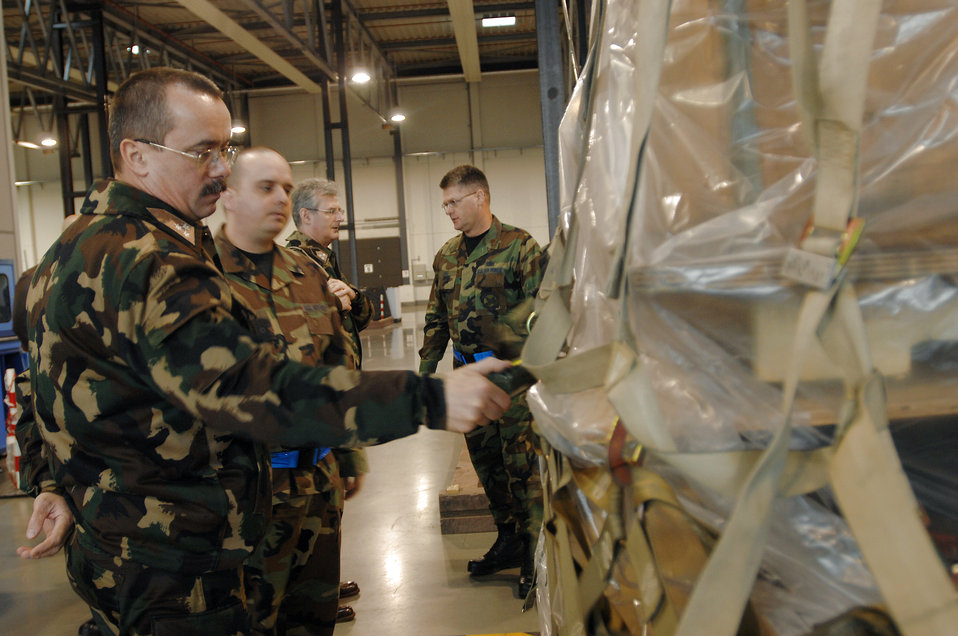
Hungarian AF leader visits Ramstein

Lt. Gen. Laszlo Tombol, the Hungarian Joint Forces Command commander, gets a closer look at the way the 723rd Air Mobility Squadron palletizes cargo for shipping during his tour of the squadron Feb. 6 at Ramstein Air Base, Germany.